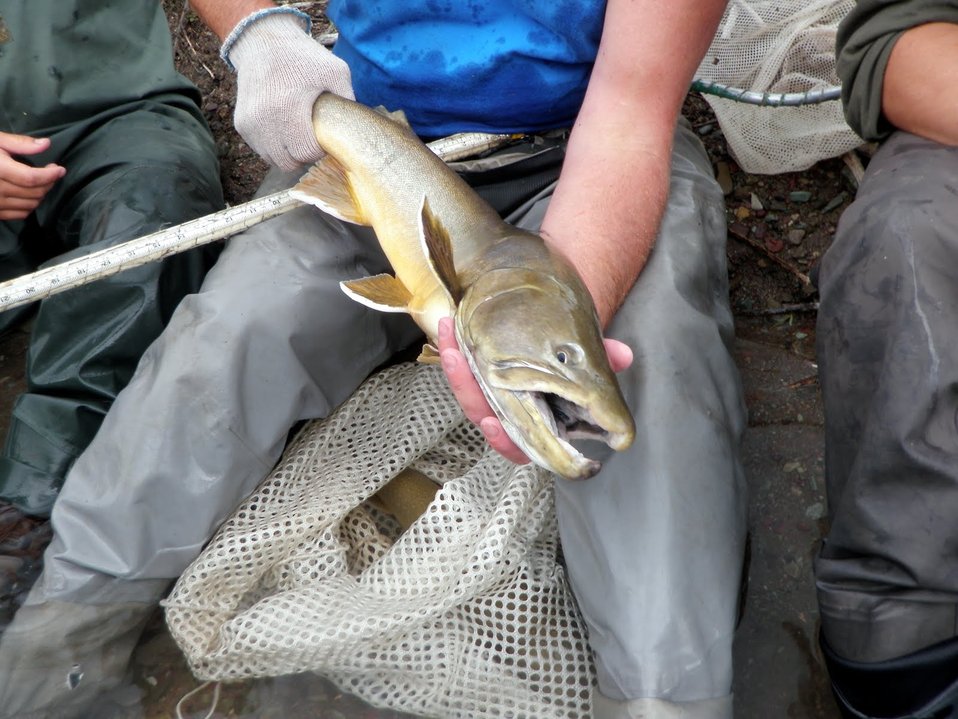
Bull Trout

The biologists measured the bull trout they caught for their survey.